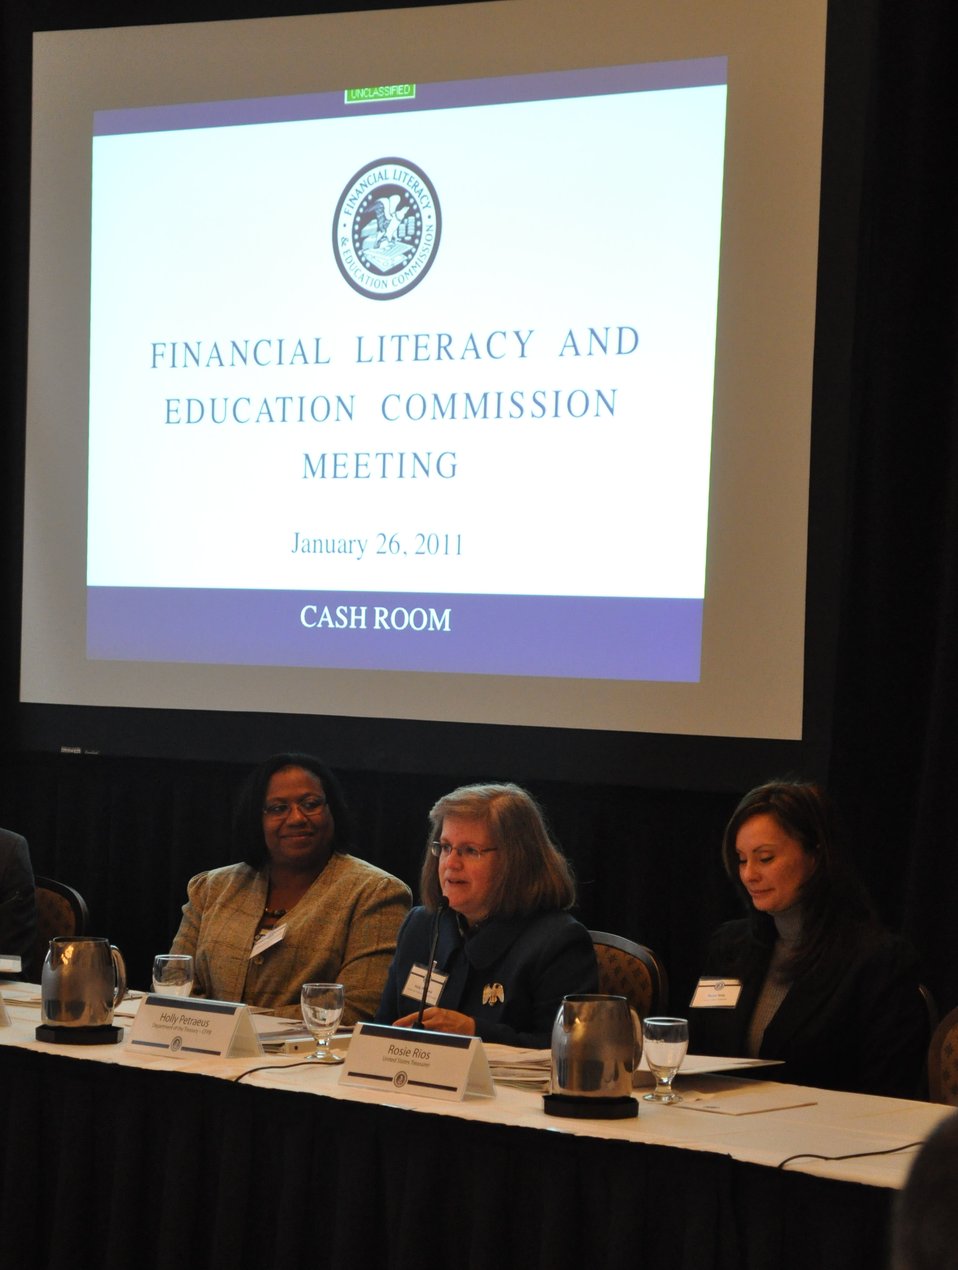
Financial Literacy and Education Commission, 01/26/2011

Holly Petraeus, Director of the Office of Servicemember Affairs at the Consumer Financial Protection Bureau implementation team, addresses the attendees at the Financial Literacy and Education Commission meeting held in Treasury's Cash Room.